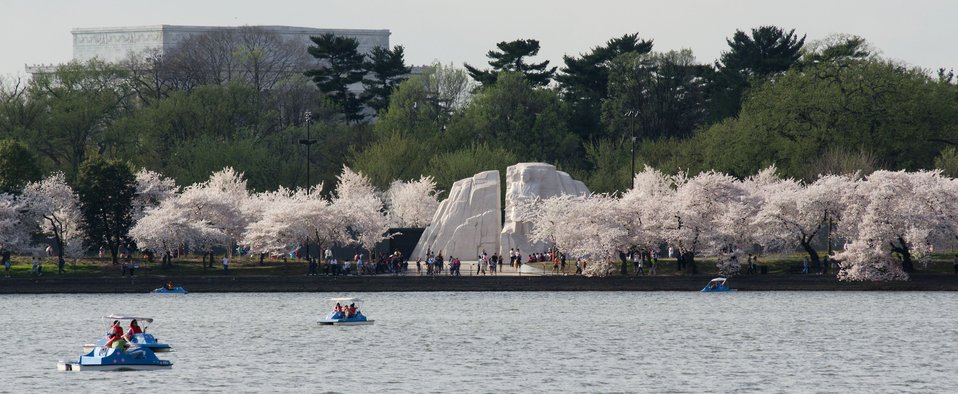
Martin Luther King, Jr. Memorial and cherry blossoms at the Tidal Basin in Washington, D.C., on Tuesday, March 20, 2012.